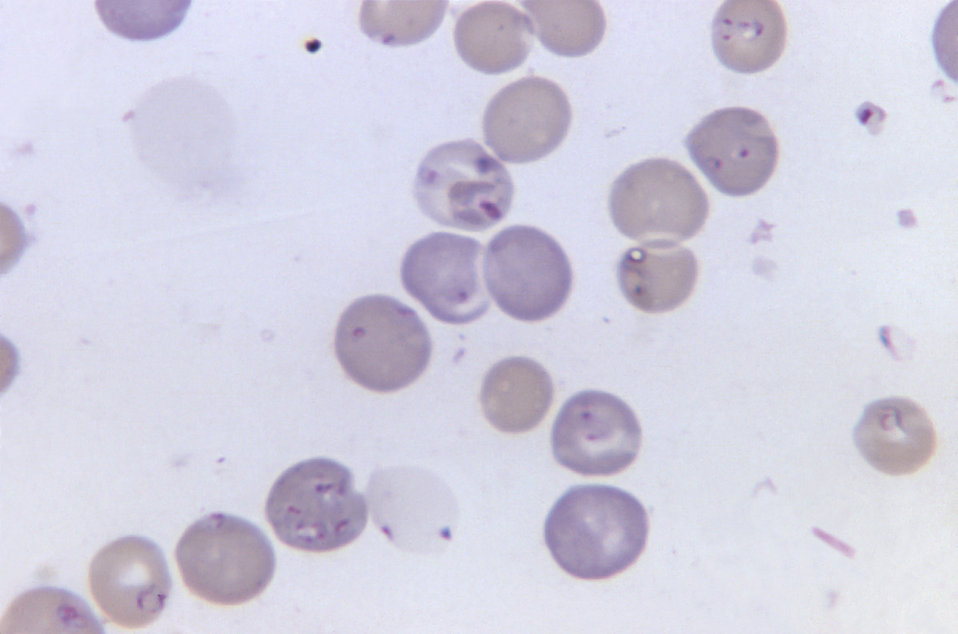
These Giemsa stained hamster red blood cells contain both Babesia microti and Plasmodium berghei; Mag. 1125X.